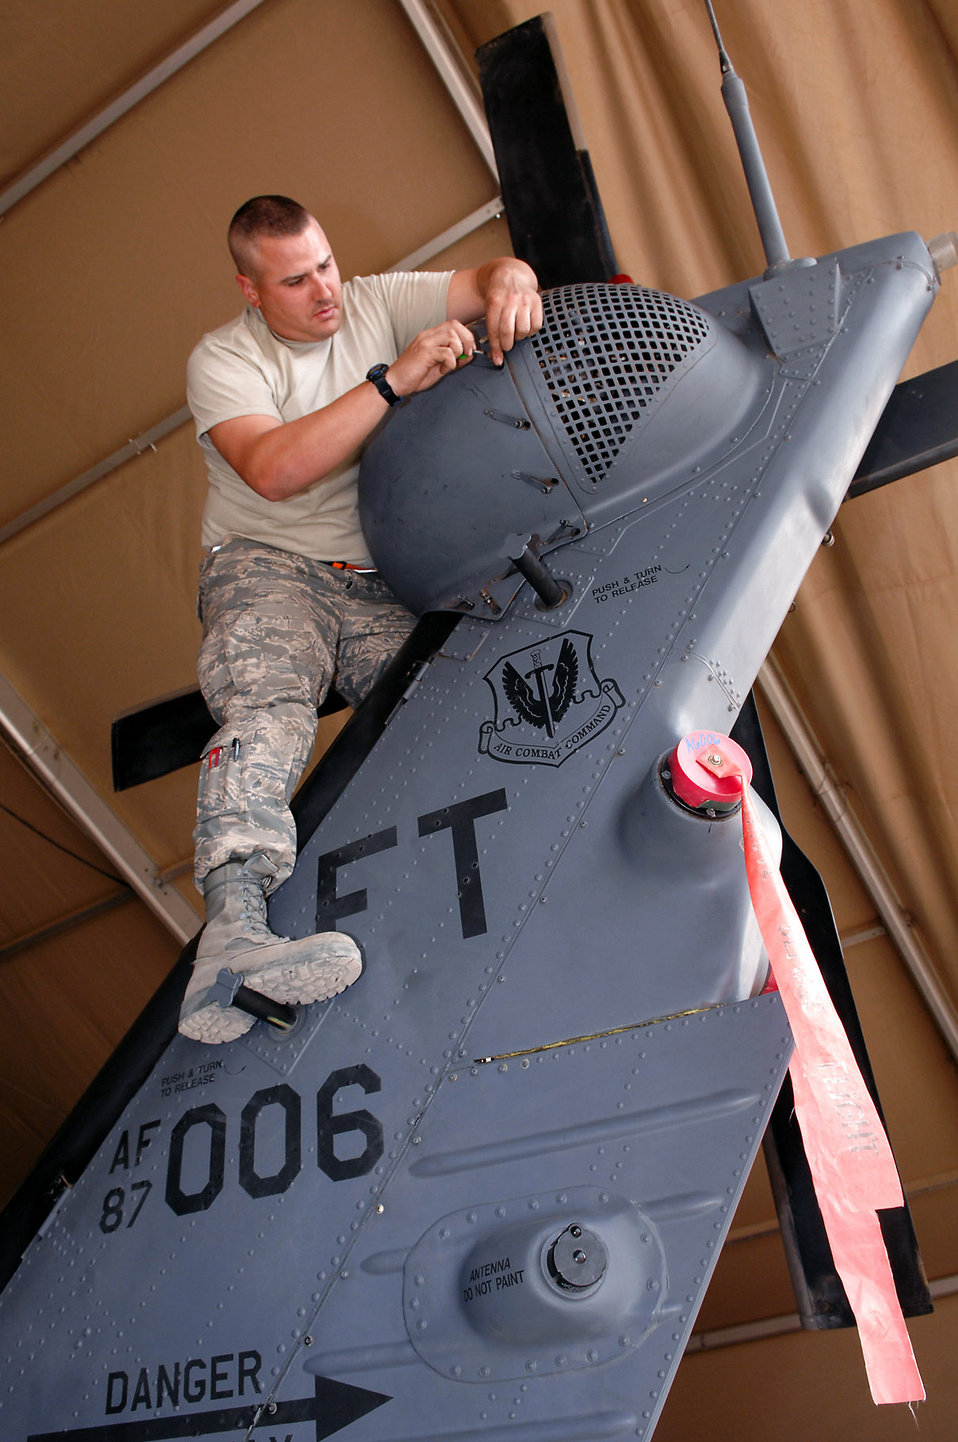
Helo maintenance

Staff Sgt. Tait Delzer re-installs a tail rotor cover on an HH-60 Pave Hawk helicopter March 12 at Balad Air Base, Iraq. Sergeant Delzer, a crew chief with the 64th Expeditionary Helicopter Maintenance Unit, performed an inspection on the aircraft after it had been flown 300 hours. During the inspection, all of the panels and covers were removed to facilitate preventative maintenance on the aircraft's systems and equipment. Sergeant Delzer is deployed from Moody Air Force Base, Ga.